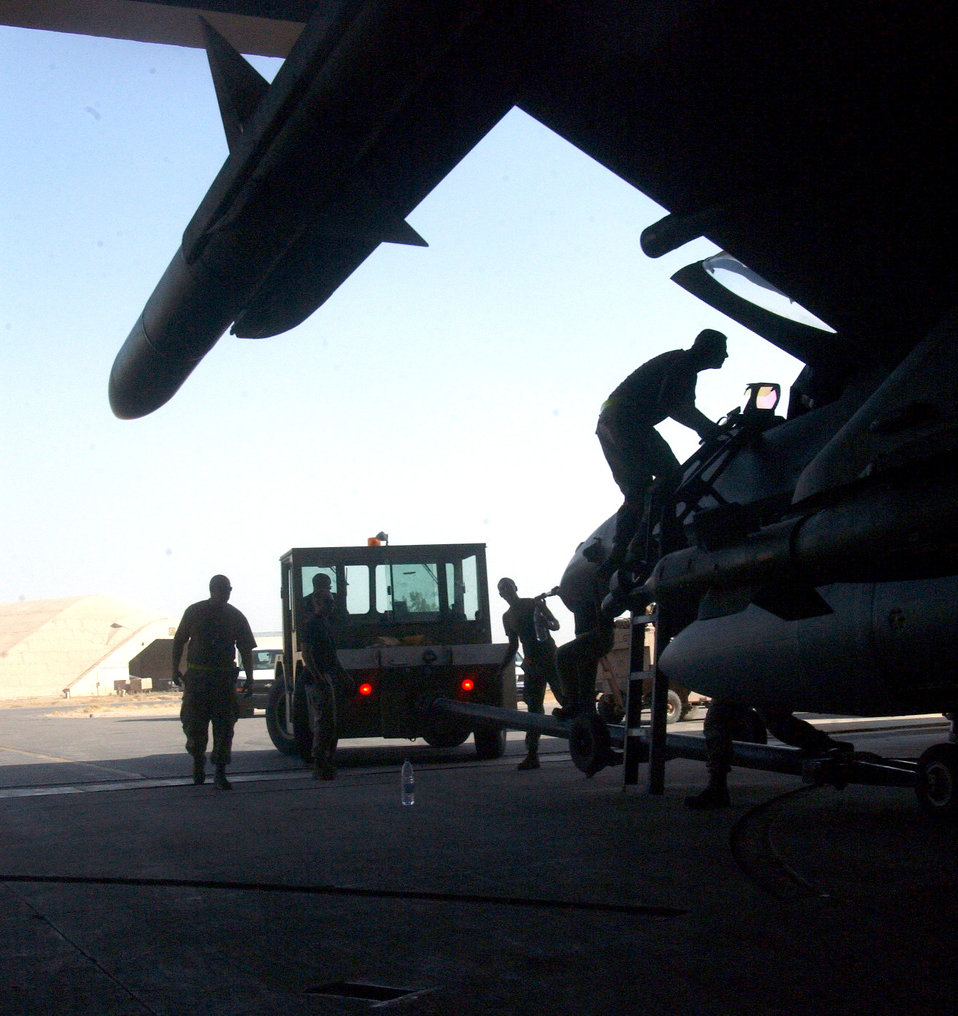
F-16 maintainers make sure curtain gets raised

BALAD AIR BASE, Iraq -- Airmen with the 332nd Expeditionary Aircraft Maintenance Squadron here prepare to move an F-16 Fighting Falcon in preparation for a mission.